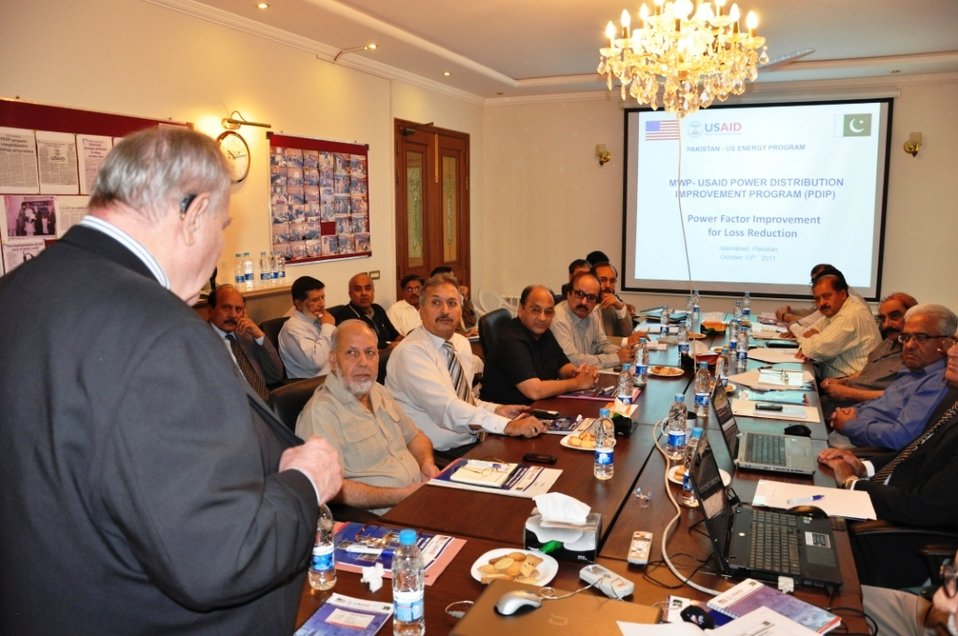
Engineering Workshop on Oct 13, 2011 consultative meeting with all DISCOs on loss reduction through power factor improvement.

Mr. Dick Dumford highlighted the importance of energy loss reduction through power factor improvement in a consultative meeting with the engineering staff of all 9 DISCOs.